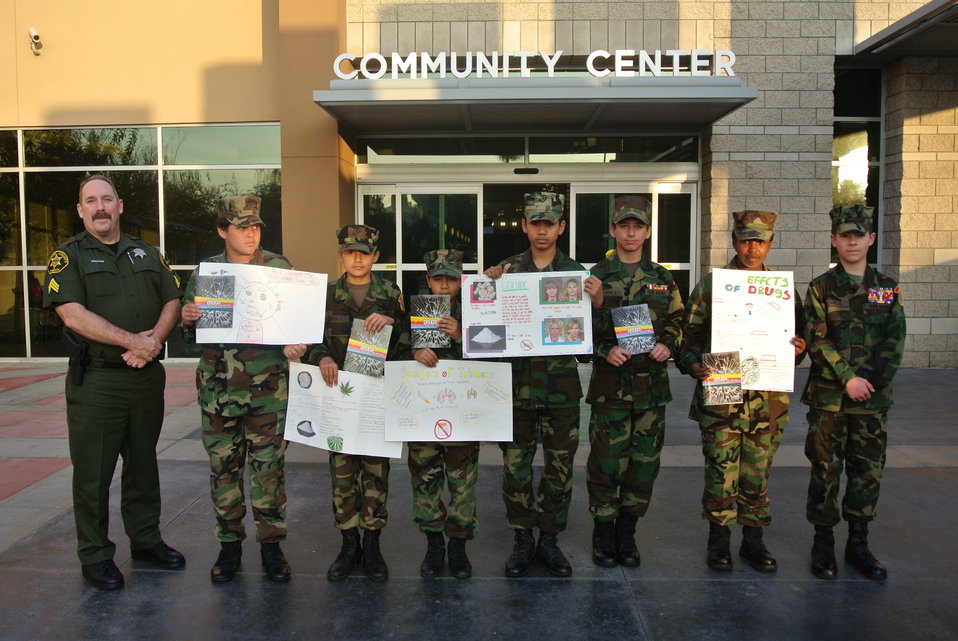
National Drug Fact Week at the Brea Community Center in Brea, California hosted by Tustin Young Marines.